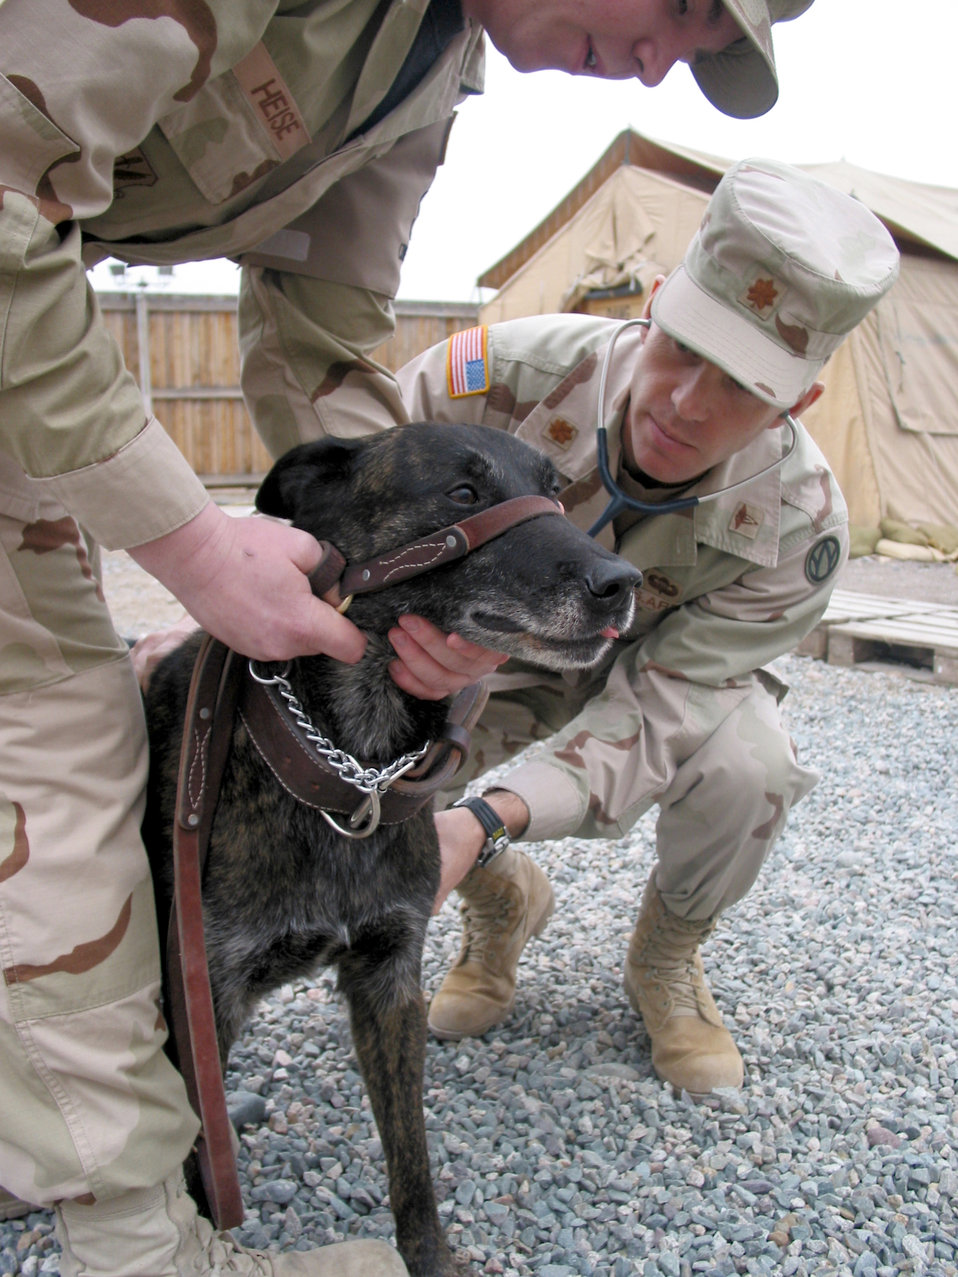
Dogs help secure base

MANAS AIR BASE, Kyrgyzstan -- Army Maj. Charles Dodd gives Rocky, a military working dog here, a health checkup with the assistance of Senior Airman Scott Heise. Major Dodd is the 376th Expeditionary Medical Group veterinarian. Airman Heise is a dog handler with the 376th Expeditionary Security Forces Squadron.